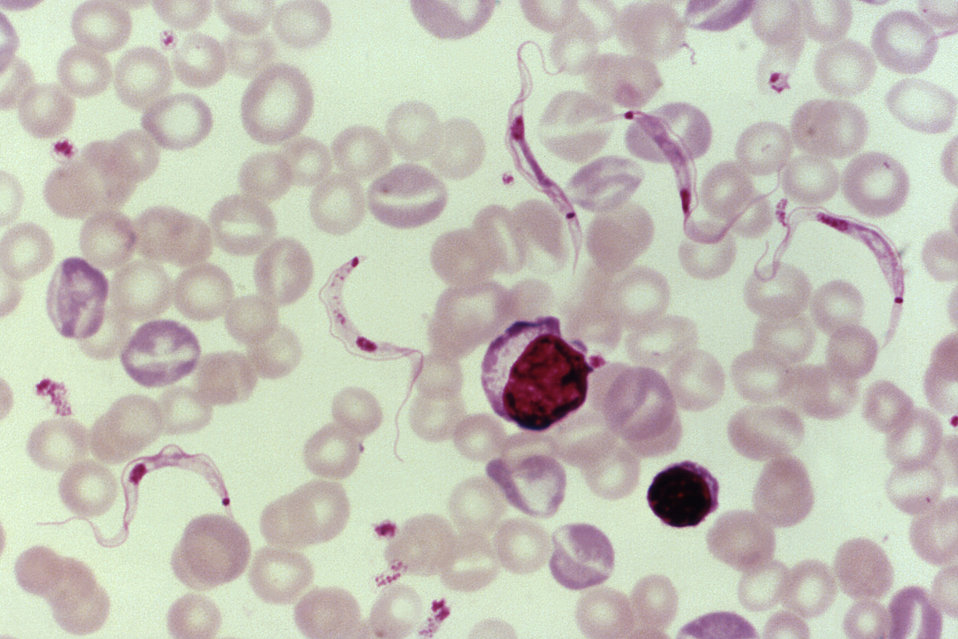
Magnified 1000X, this photomicrograph depicts a number of Trypanosoma lewisi flagellate parasites that were present in a blood film specimen, and which had been highlighted using a Giemsa stain.